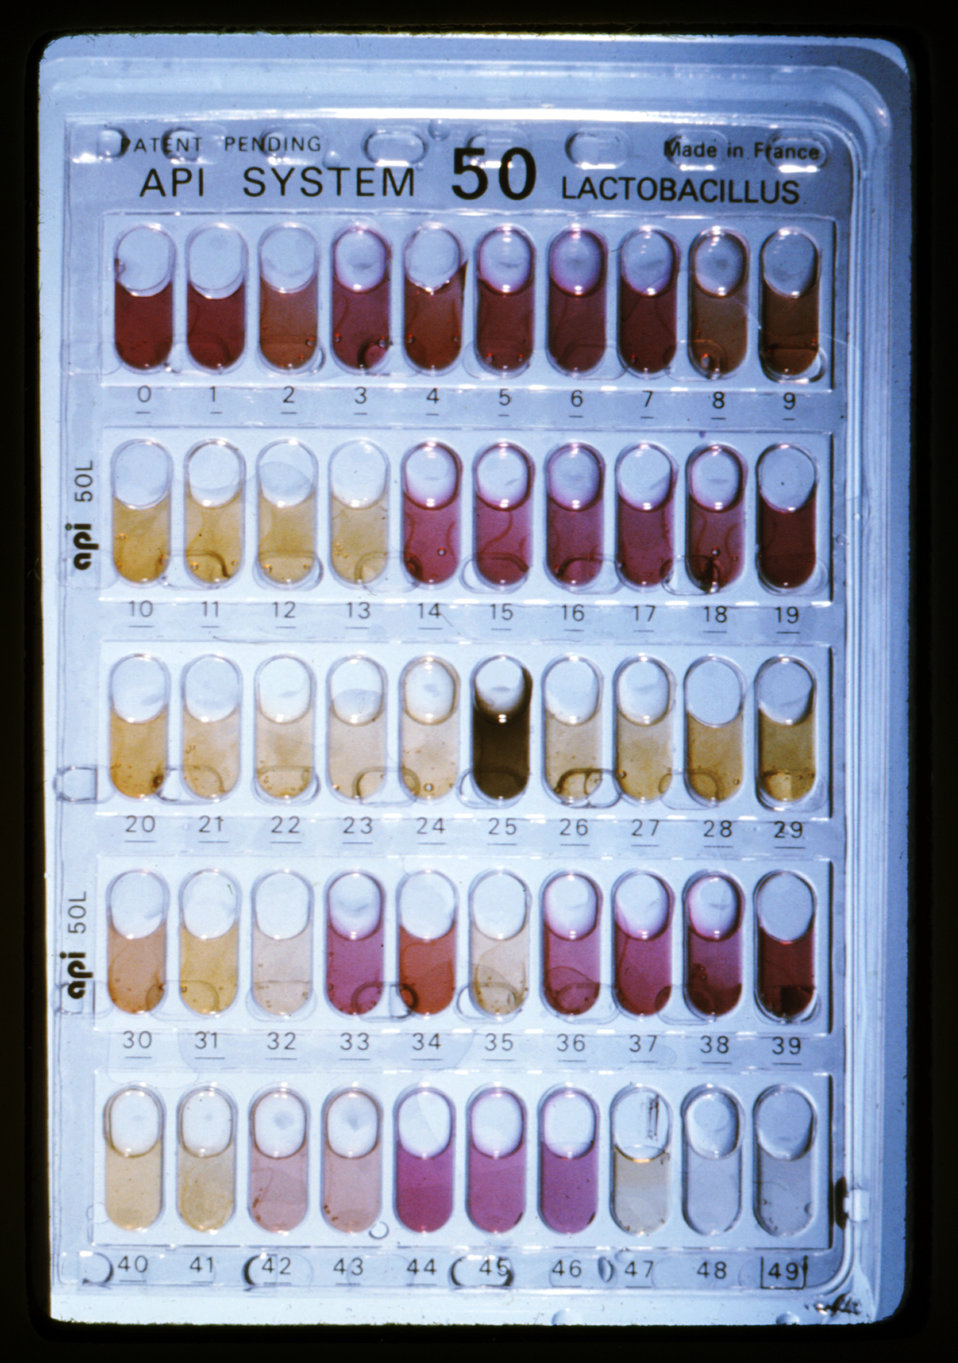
Using the API� system, here 50 wells have been inoculated with Clostridium ramosum.